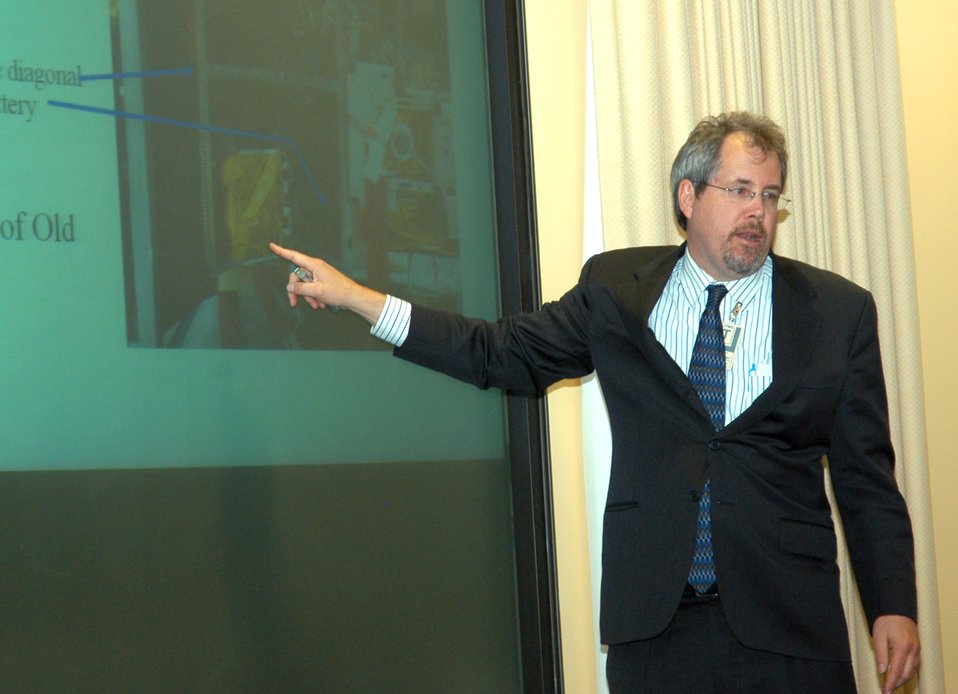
Space pros remember SVN-15's history

Frank Czopek describes areas of GPS Satellite Vehicle Number 15 that caught fire as a result of an electrical short while the satellite was still on the ground. The fire earned SVN-15 nicknames such as